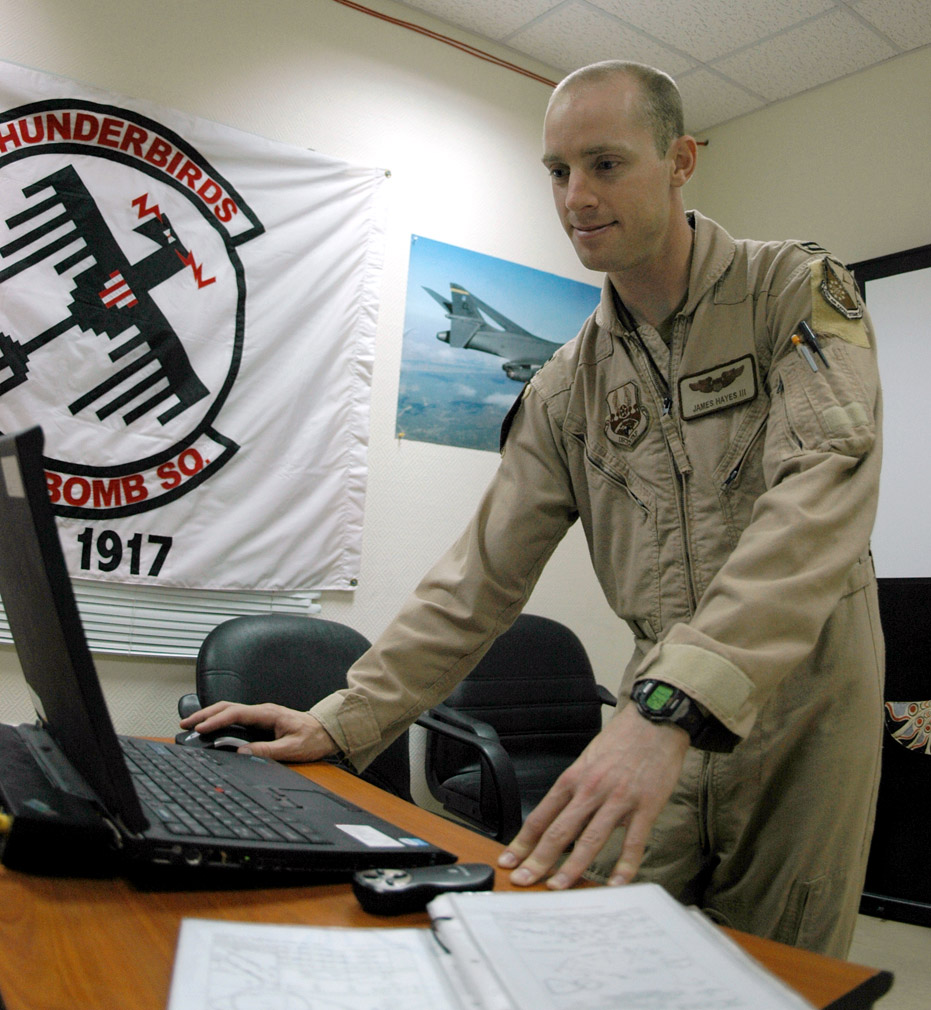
Lives depend on effective communication

Capt. James Hayes prepares for a close air support mission. CAS missions require effective communication between air and ground forces. Captain Hayes is pilot deployed to the 34th Expeditionary Bomb Squadron in Southwest Asia.